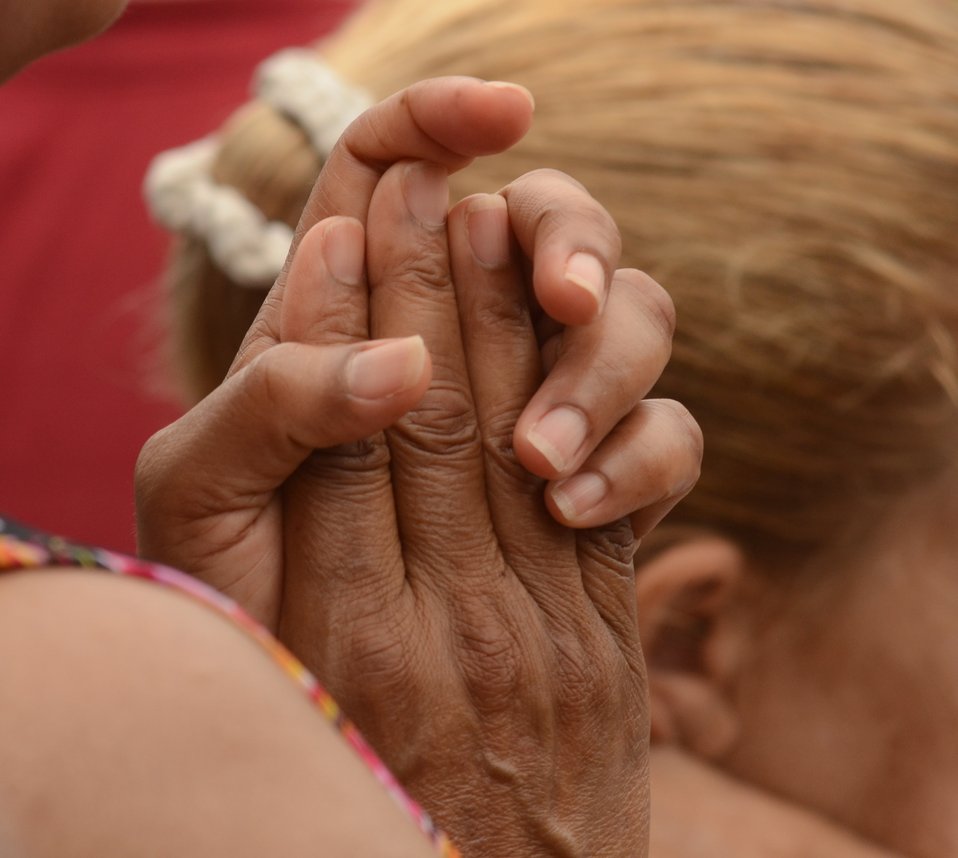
Hands of one of the marchers at the Lincoln Memorial for the March on Washington, D.C., on Wed., Aug. 28, 2013.